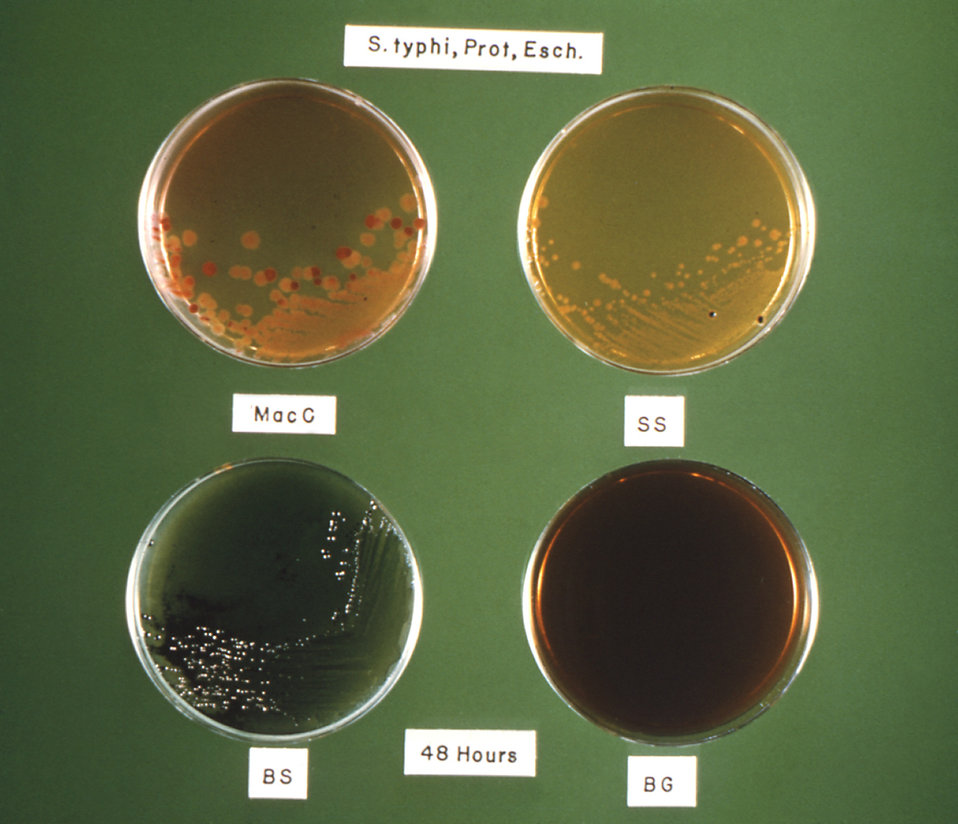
Here, S. typhi, E. coli, and Proteus sp. bacteria are cultured on four different culture media.